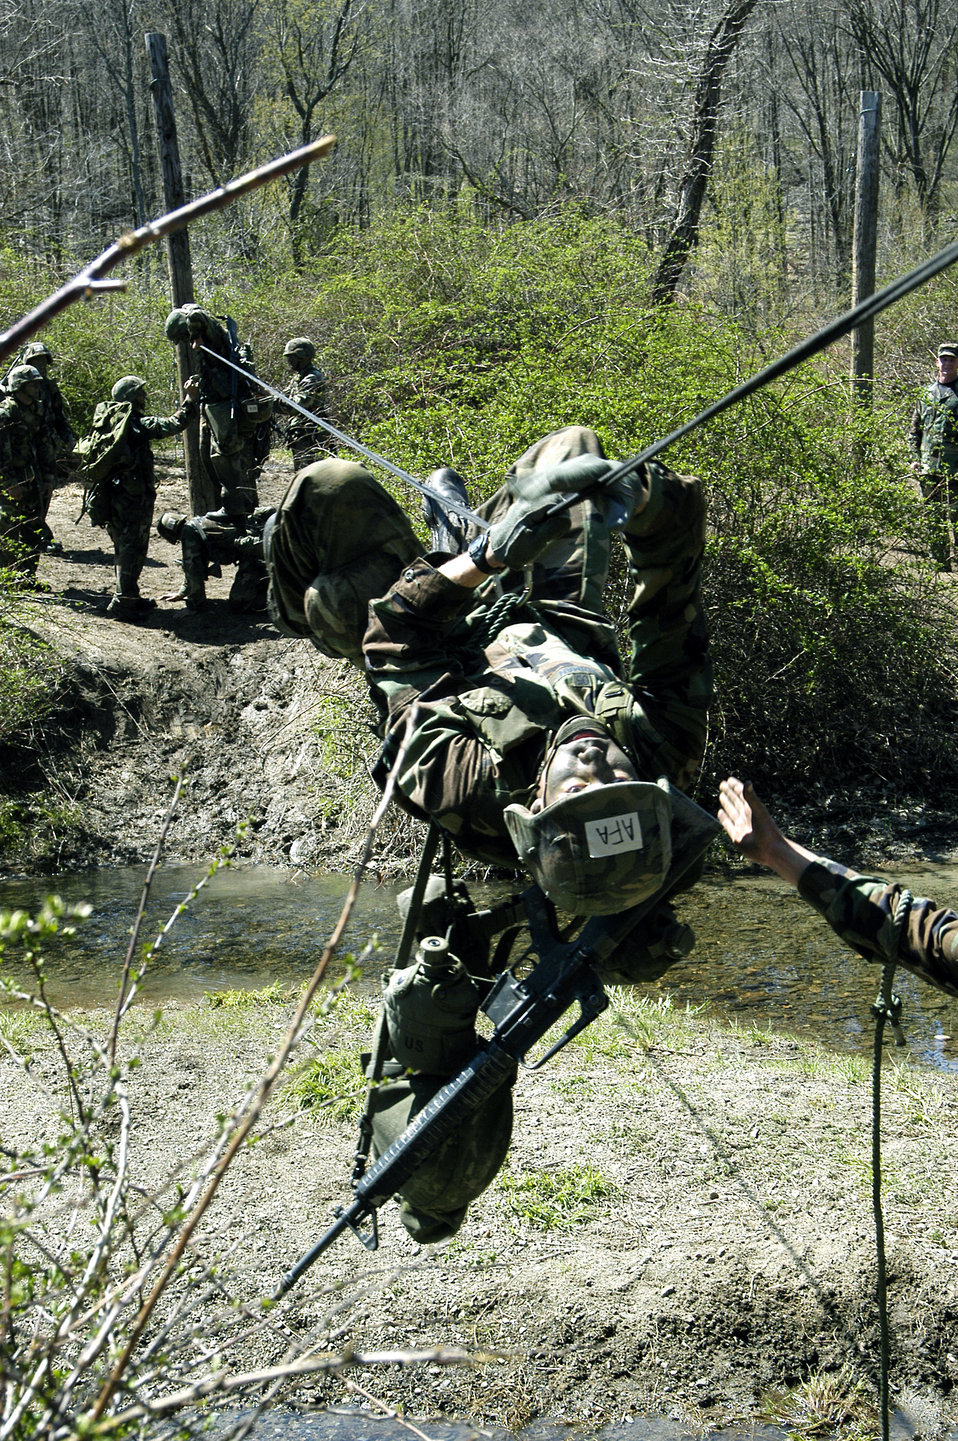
Cadets take fourth at Sandhurst

WEST POINT, N.Y. -- Crossing a stream via zip line was only one obstacle 11 U.S. Air Force Academy cadets conquered during nine field events at the Sandhurst competition here April 24. The cadets placed fourth out of 45 teams entered in the event.